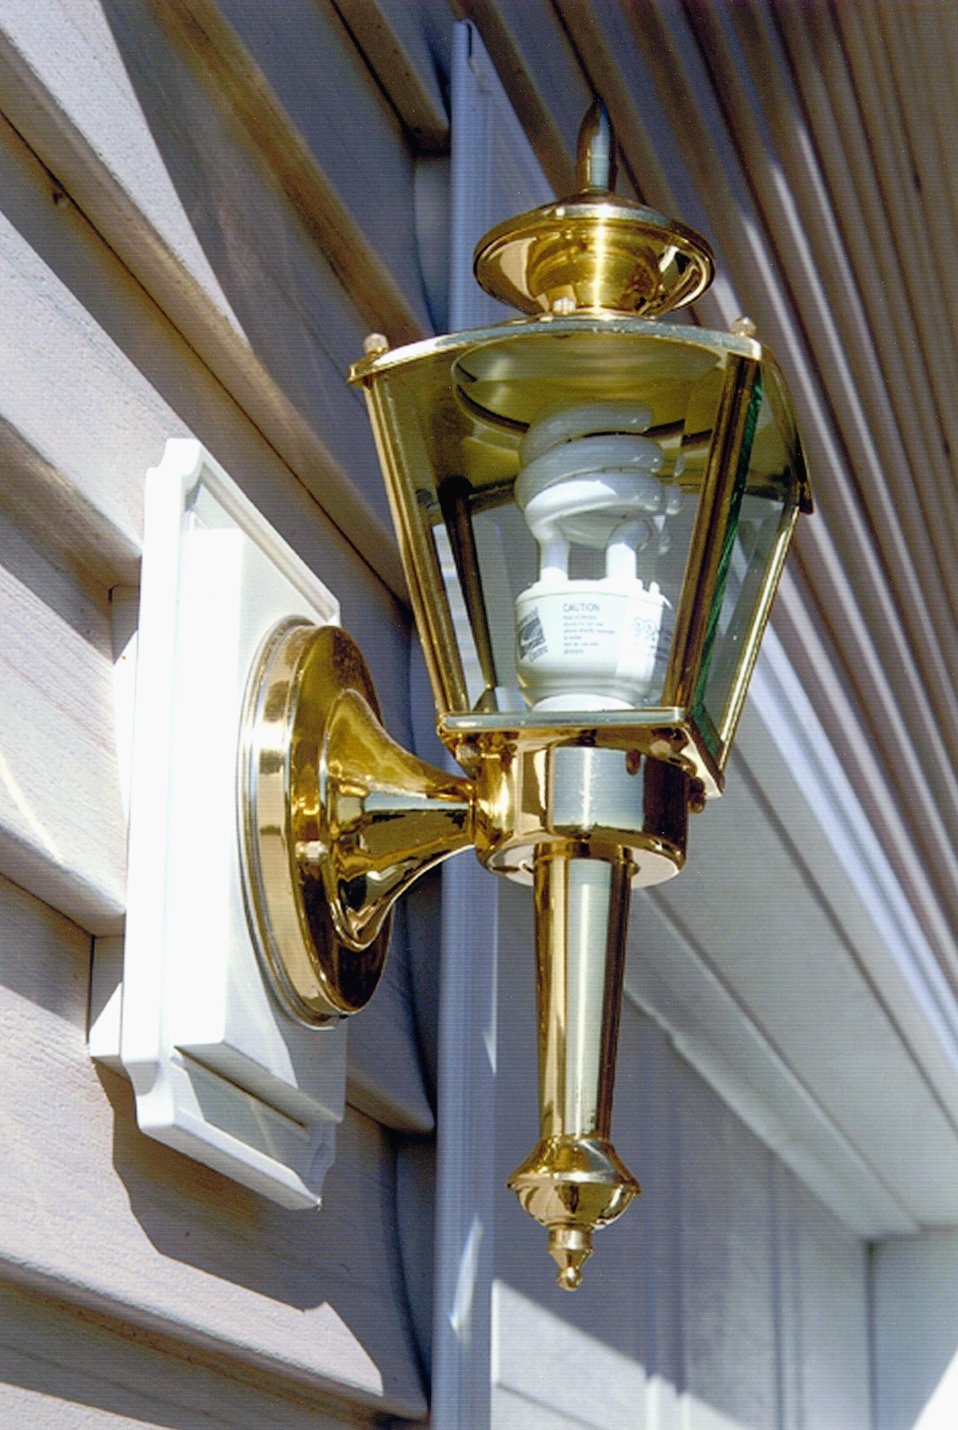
COMPACT FLUORESCENT LIGHTING USED ON THE EXTERIOR LANTERN OF THE SOLAR PATRIOT HOUSE.

THE SOLAR PATRIOT, A MODULAR HOME DISPLAYED ON THE NATIONAL MALL IN APRIL, 2001 AS PART OF THE SOLAR FORUM 2001, WAS PERMANENTLY INSTALLED IN NORTHERN VIRGINIA. THIS ZERO ENERGY HOME PRODUCES ALL THE ENERGY IT NEEDS FEATURING PHOTOVOLTAIC SYSTEMS, PASSIVE SOLAR DESIGNS, GEOTHERMAL HEAT PUMP, COMPACT FLUORESCENT LIGHTING AND HIGH EFFICIENCY APPLIANCES. IT IS CONNECTED TO THE ELECTRICITY GRID, BUT HAS THE CAPABILITY TO OPERATE AT LEAST 24 HOURS WITHOUT ELECTRICITY FROM THE UTILITY.